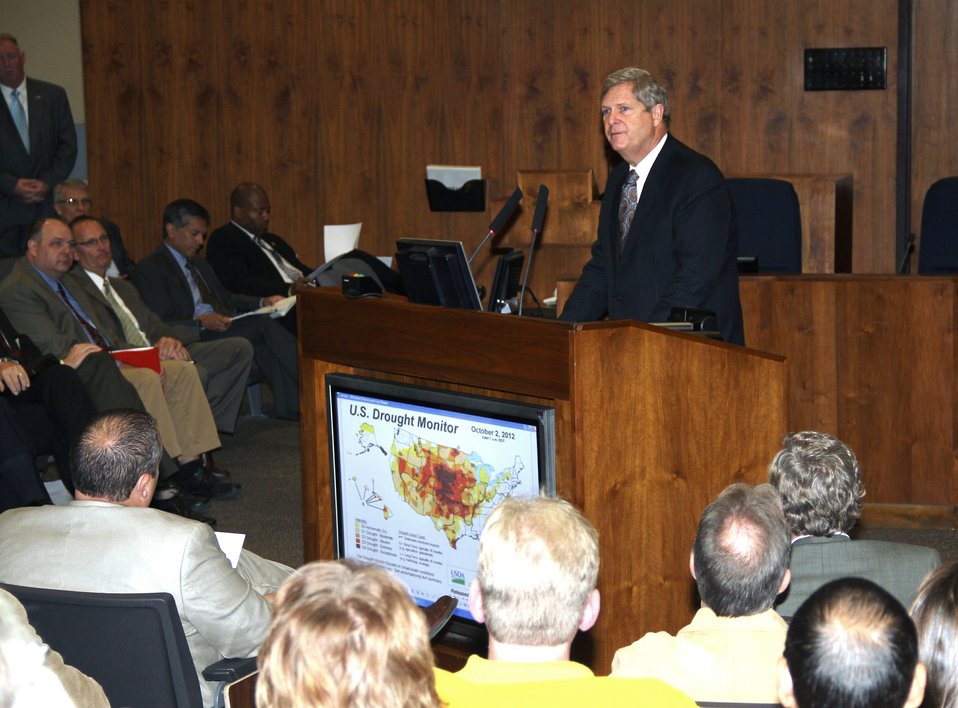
Agriculture Secretary Tom Vilsack speaks at the opening session of a Federal Drought Workshop in Omaha, NE on Tuesday, Oct. 9, 2012. This was the first of four regional workshops to outline resources available to assist with drought recovery effort. Secretary Vilsack indicated that President Obama had directed federal agencies to take every possible step to help farmers and ranchers, businesses, and rural communities recover as a result of one of the country's worst droughts in decades. The U.S. Department of Agriculture (USDA) is partnering with local, state and federal partners to hold the workshops, working closely with the Department of Commerce, the Small Business Administration and the Federal Emergency Management Agency to facilitate these meetings.